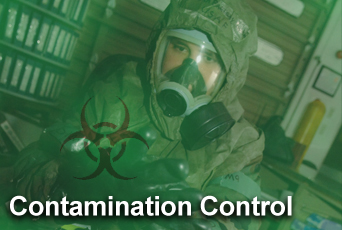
Contamination control area helps Airmen 'clean up'

A contamination control area allows Airmen with every hazard from biological to chemical to come